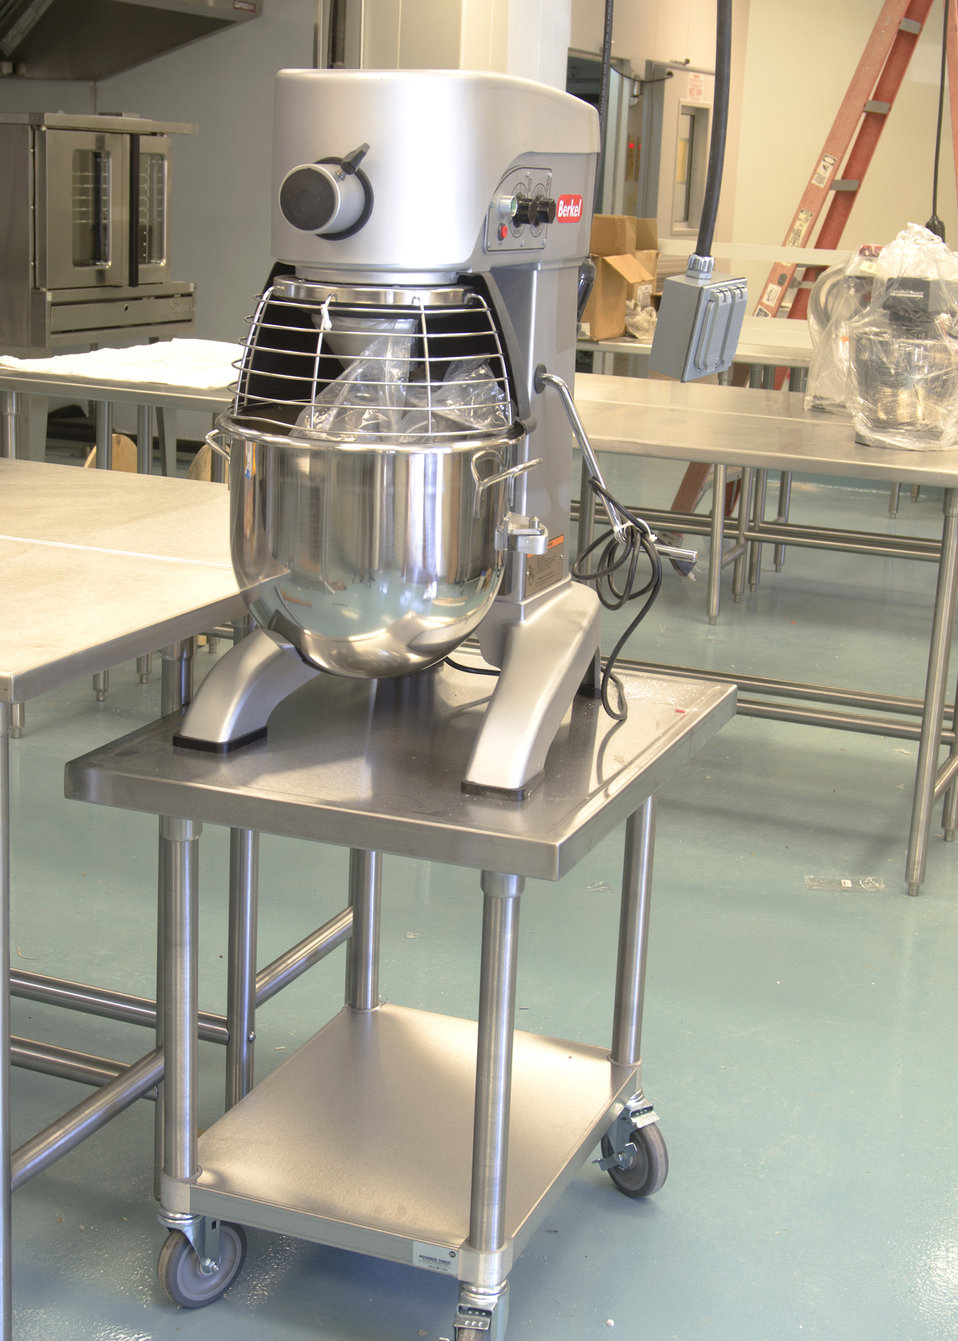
YorKitchen is a shared incubator kitchen that received partial funding through the U. S. Department of Agriculture’s (USDA) Rural Development (RD) Rural Business Enterprise Grant (RBEG) program. This program provides grants for rural projects that finance and facilitate development of small and emerging rural businesses, distance- learning networks, and employment related adult education programs. YorKitchen is a commercially equipped and fully licensed kitchen in which new entrepreneurs can prepare new products without the associated start up costs. This “incubator kitchen” provides full business support to include invoicing, accounting, advertising, outreach, and marketing for entrepreneurs. The YorKitchen is housed in the annex of Central Market in York, PA. This location offers local agricultural producers increased opportunities to develop new value-added products with their produce.